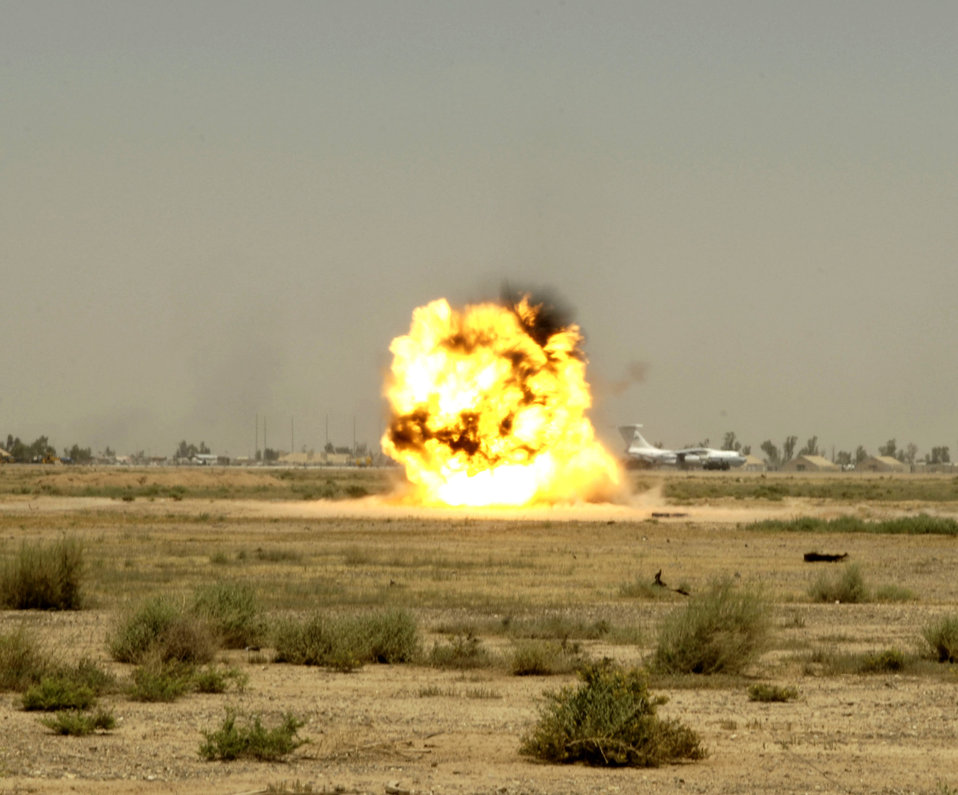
Controlled detonation

A controlled detonation explodes at Balad Air Base, Iraq, on Monday, May 22, 2006. Explosive ordnance disposal technicians from the 332nd Expeditionary Civil Engineer Squadron use the range when they find unexploded ordnance on base.